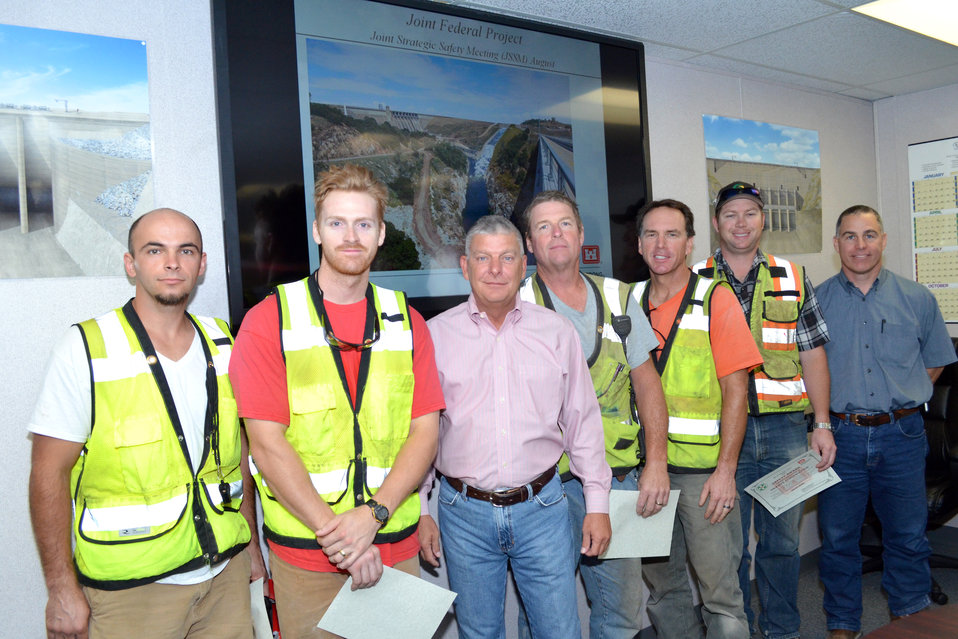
Granite Construction staff recognized for response to July 30 crash at Folsom spillway site

Granite Construction Inc. employees receive a U.S. Army Corps of Engineers safety award Aug. 2, 2013, for their response to a dangerous traffic accident at the Folsom Dam auxiliary spillway construction site July 30. The employees were among the first responders to a truck that fell more than 100 feet from Folsom Lake Crossing Road into the spillway pit, and safely pulled the driver from the truck. Folsom Dam auxiliary spillway project director David Thomas (third from left) presented the awards to (from left) Andrey Koblic, Troy Agler, Kelvin Nall, Doug Swystun, Brian Wing and Craig Humphreys. Award-recipient Mike Davis is not pictured.